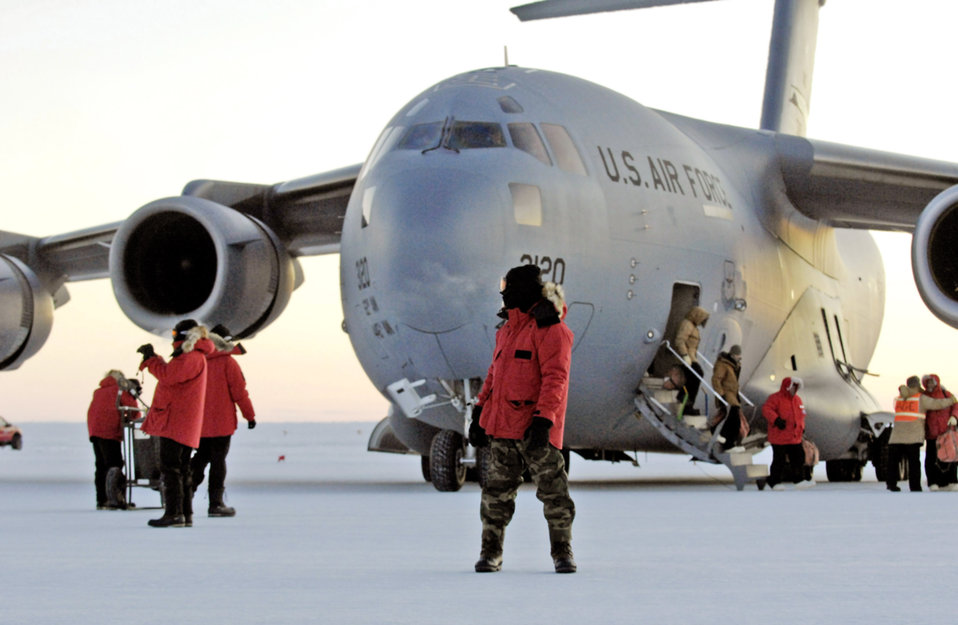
Operation Deep Freeze 2007-08 begins

A maintainer looks as National Science Foundation Members get off a C-17 Globemaster III during the Operation Deep Freeze winter fly-in around the Pegasus Runway Aug. 20 in Antarctica. A C-17 and 31 Airmen from McChord Air Force Base, Wash., began the annual winter fly-in augmentation of scientists, support personnel, food and equipment for the U.S. Antarctic Program at McMurdo Station. WinFly is the opening of the first flights to McMurdo Station, which closed for the austral winter in February.